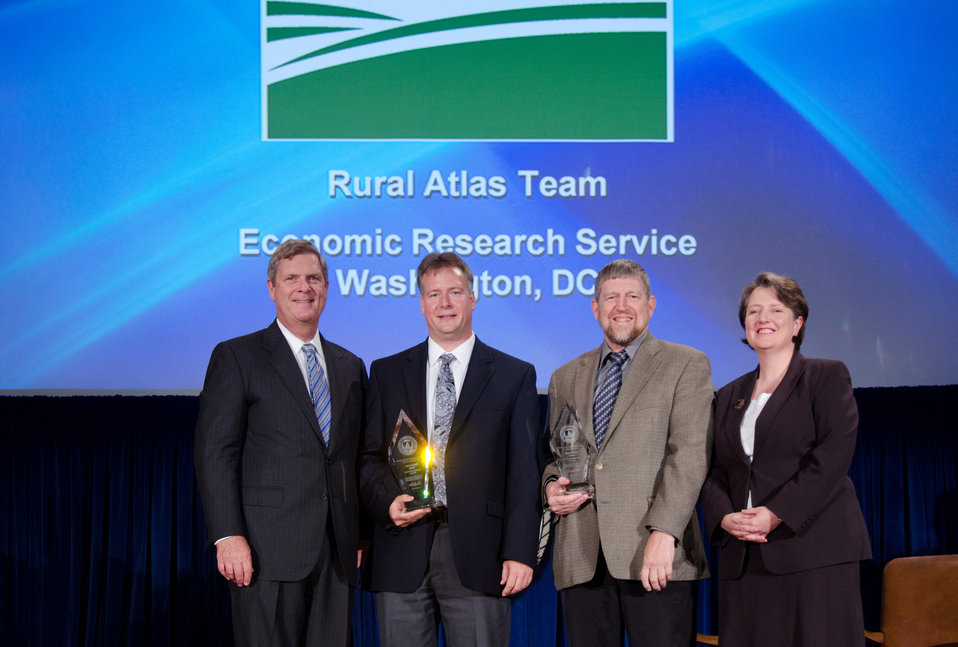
Agriculture Secretary Tom Vilsack (l) and Deputy Secretary Kathleen Merrigan (r), presents the Assisting, Rural Communities To Create Prosperity So They are Self-Sustaining, Repopulating, and Economically Thriving Award to Rural Atlas Team, Economic Research Service, Washington, DC
Vincent E. Breneman and John B. Cromartie Group Leaders For significant contributions to the production of the Atlas of Rural and Small Town America, which provides searchable and easily accessible data on migration trends, employment and demographics in rural America. On Wednesday, September 14, 2011 in the Jefferson Auditorium at the US Department of Agriculture in Washington, DC.